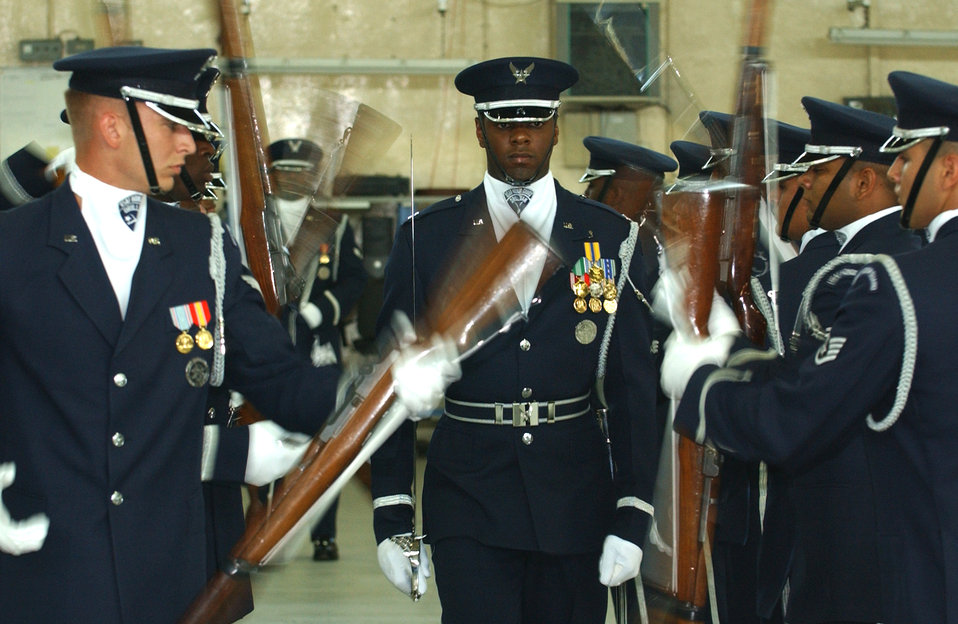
The right stuff

ROYAL AIR FORCE MILDENHALL, England -- Members of the United States Air Force Honor Guard drill team hurl 13-pound weapons over and around their commander, while performing a sequence of maneuvers here June 14. The drill team is from the 11th Operations Group at Bolling Air Force Base, D.C.